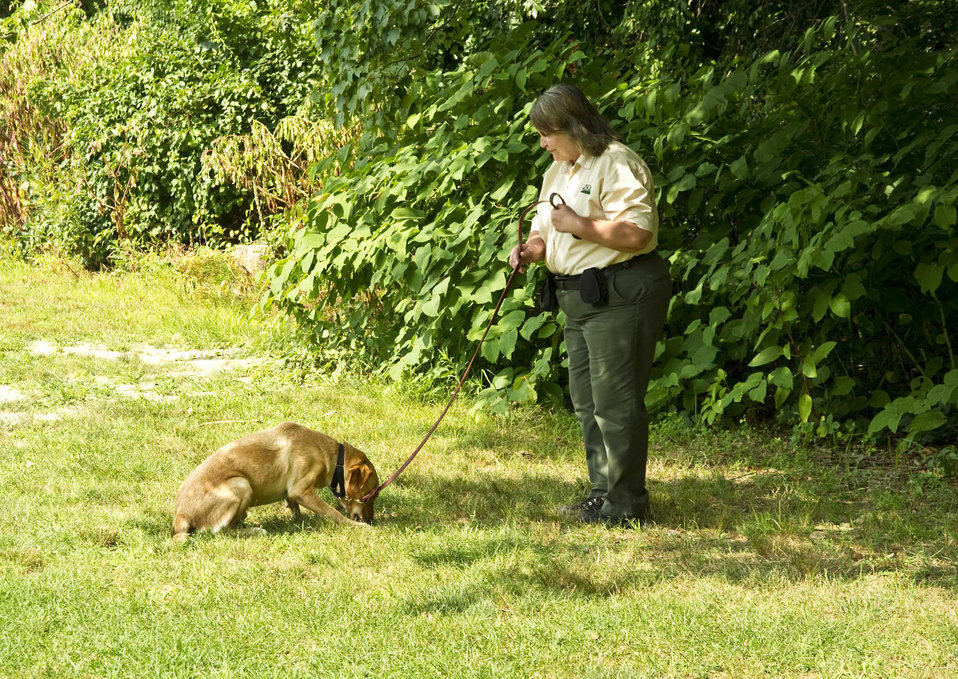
U.S. Department of Agriculture (USDA) Animal and Plant Health Inspection Service (APHIS) training technician Kathleen Warfield works with Asian Longhorned Beetle (ALB) Detector Dog Blaze to detect beetle “frass” or excrement in a forested are in Worcester, MA on Aug. 1, 2012. The ALB is an invasive insect that is killing trees in Massachusetts, New York, New Jersey and Ohio. Four dogs are currently being trained to recognize beetle “frass” that the beetle leaves behind. This study is part of an important mission to protect neighborhood trees and this country’s valuable forest resources from this harmful pest.